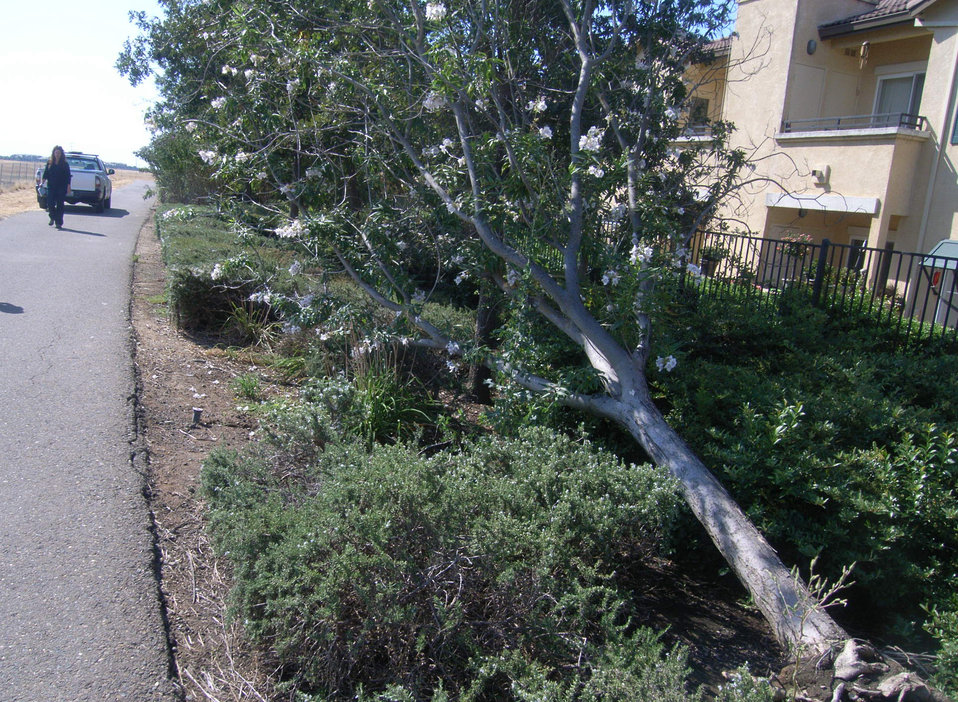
Toppled tree on Elk Grove levee

A toppled tree, identified in a U.S. Army Corps of Engineers levee inspection Aug. 13, 2012, destabilizes the land side of the Laguna West levee in Elk Grove, Calif. The U.S. Army Corps of Engineers inspects levees in its Rehabilitation and Inspection Program to ensure levees don’t pose an unacceptable risk to lives, and to provide levee managers and residents with detailed information on the condition of levees to help them make informed decisions about safety.